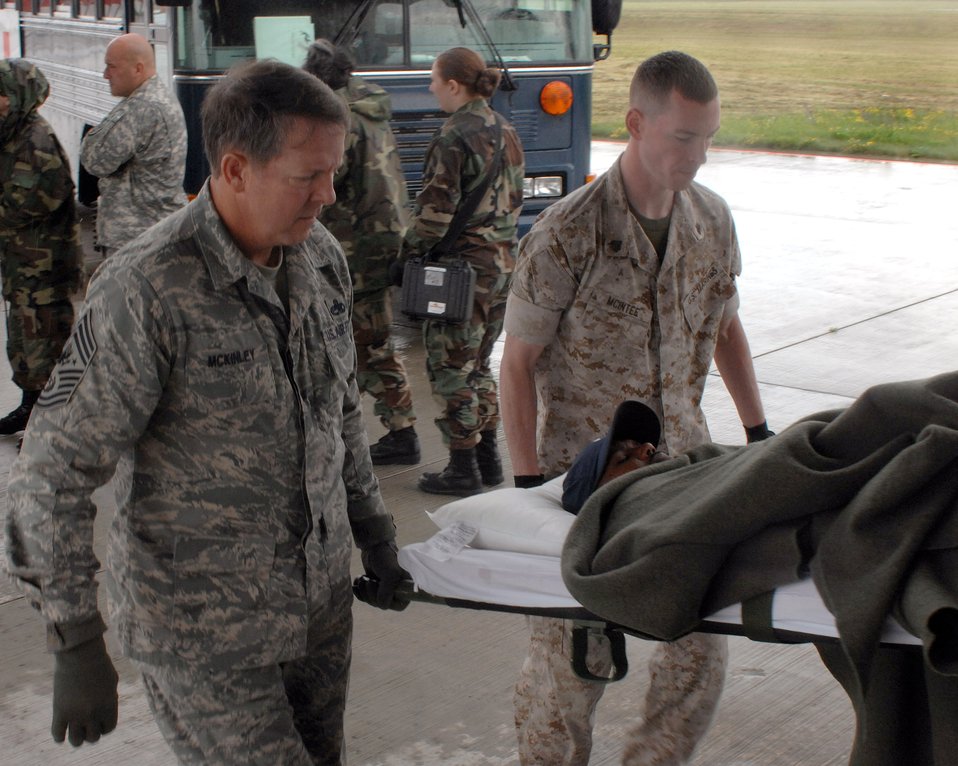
CMSAF assists with aeromedical evacuation

Chief Master Sgt. of the Air Force Rodney J. McKinley and Marine Staff Sgt. Jason McIntee help load a patient going onto an aeromedical evacuation flight July 10 at Ramstein Air Base, Germany. Chief McKinley followed patients through Landstuhl Regional Medical Center to the Contingency Areomedical Staging Facility and finally on the flight back to the states.